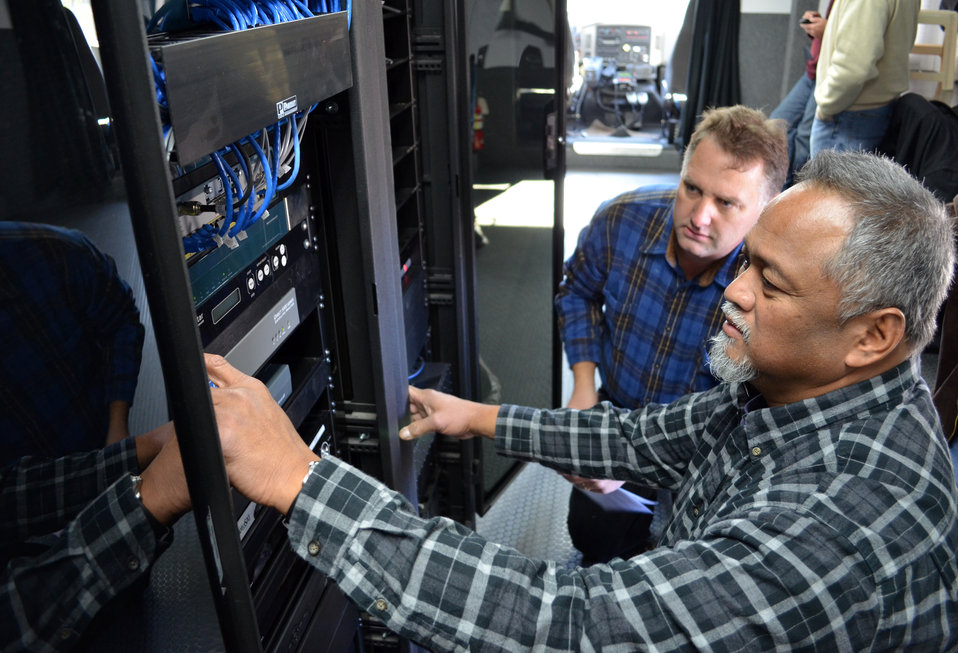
Corps trains on new emergency operations vehicles

Mike Palomo (right), a power plant mechanic with the U.S. Army Corps of Engineers Portland District, and Joe Reynolds, a civil engineer with the Sacramento District, set up a satellite link onboard a new emergency command and control vehicle Nov. 30, 2011. Palomo and Reynolds trained on the ECCV at a Corps facility in West Sacramento, Calif., from Nov. 29 to Dec. 1.